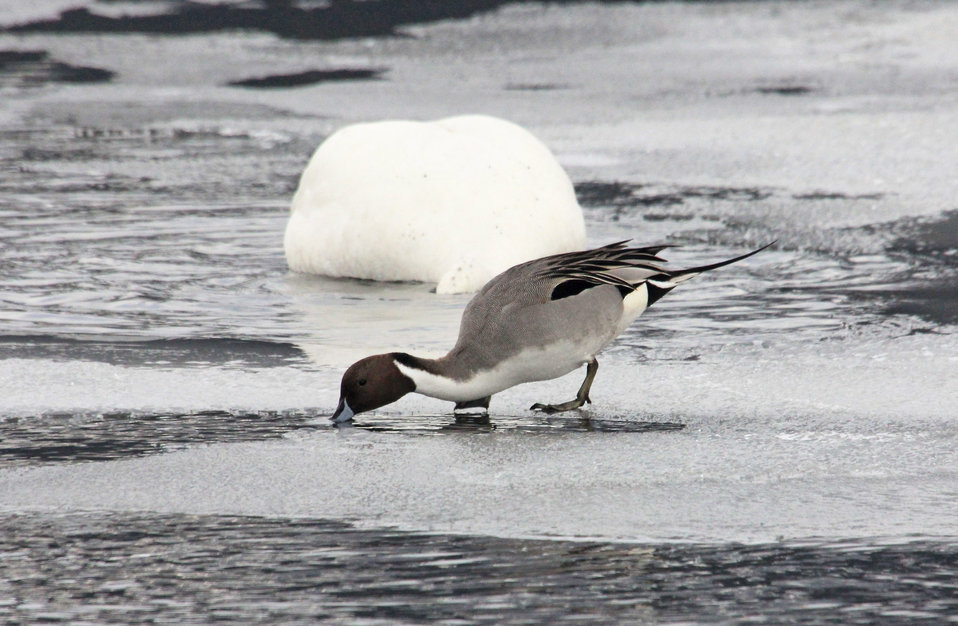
Dipping a Beak

A Northern Pintail dips its beak into the icy water near Flat Creek on the National Elk Refuge.

Credit: USFWS / Ann & Tony Hough, National Elk Refuge volunteers